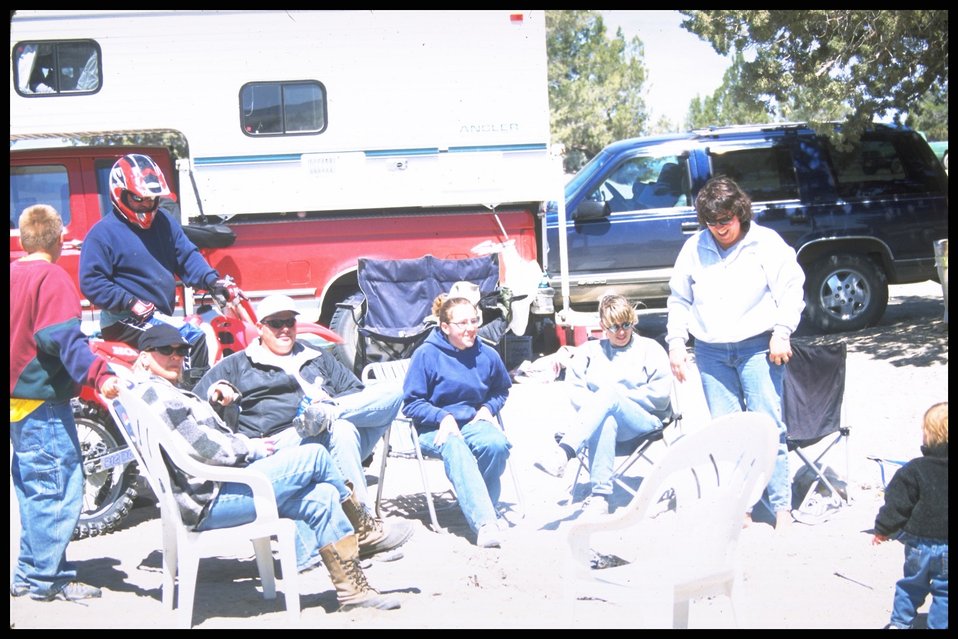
Sand Dunes tourists taking a break. Lakeview District.